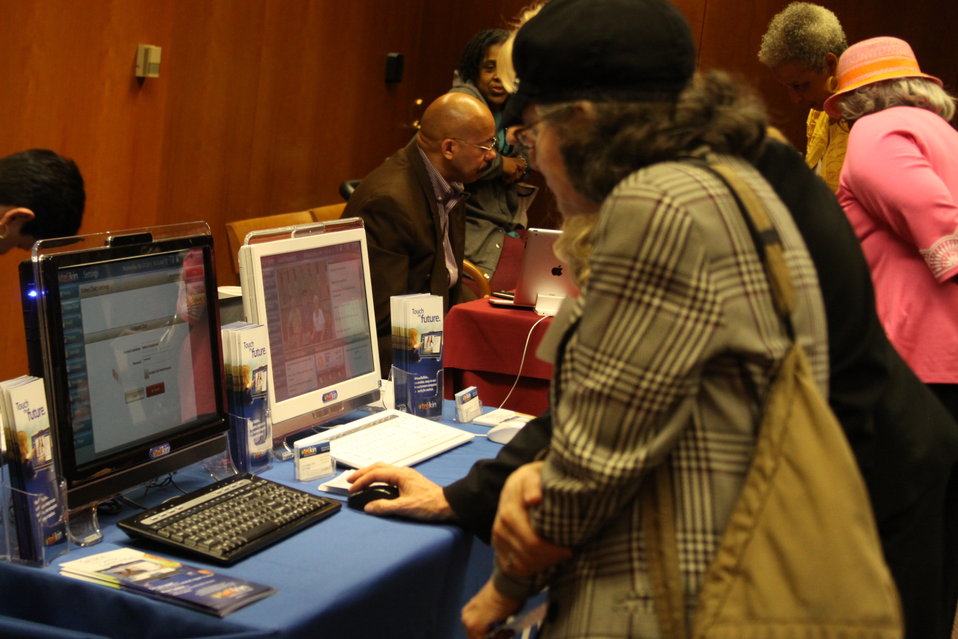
Digital Literacy for Seniors: How the Internet Can Benefit Older Americans, April 24, 2013